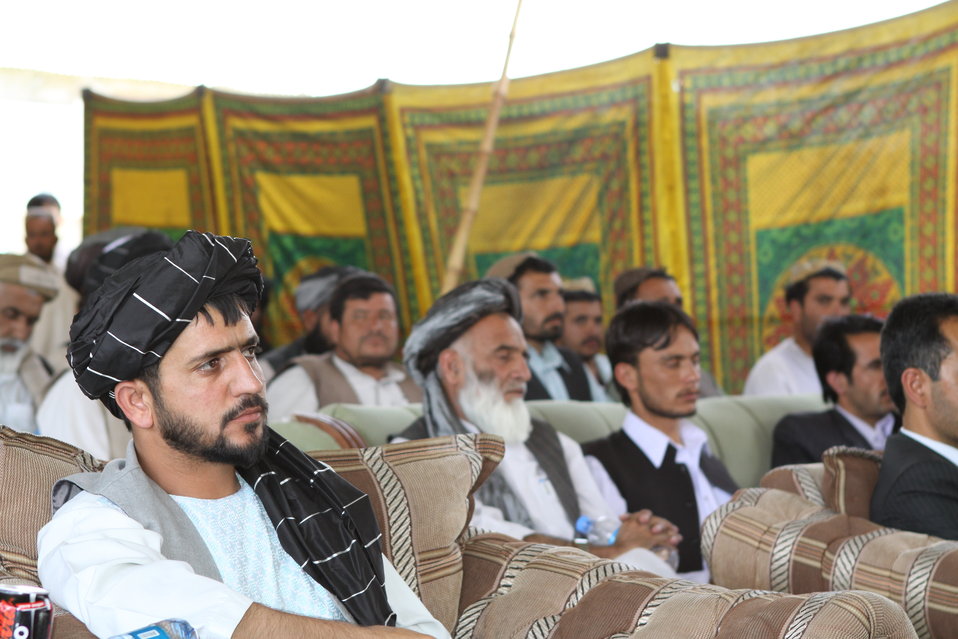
Bolan Poultry Farm